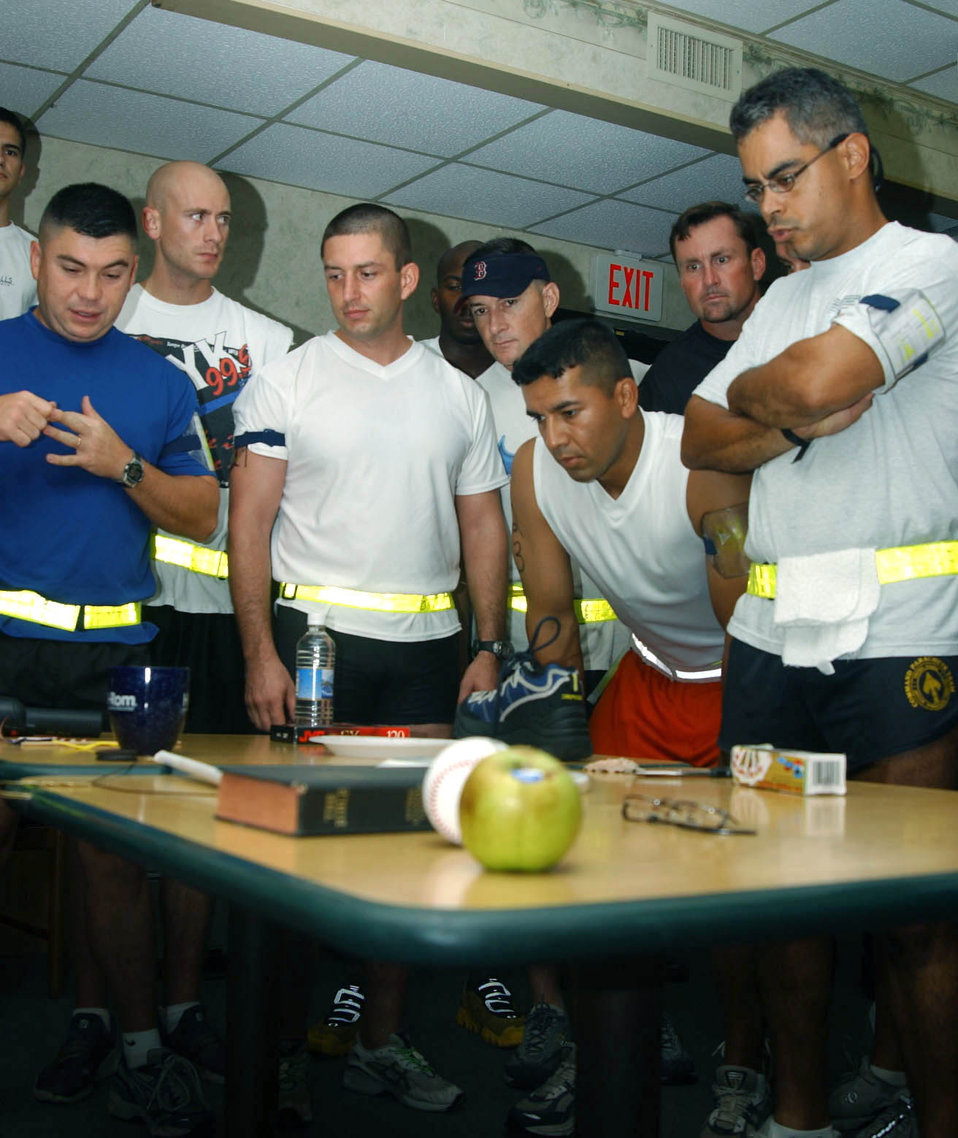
Race to the finish

MACDILL AIR FORCE BASE, Fla. -- Before the beginning of the Aug. 21 Enduro Challenge here, teams had three minutes to look at 22 random objects for a memorization test at the end of the race. Items included a VHS cassette, an apple, a Bible and a set of keys.